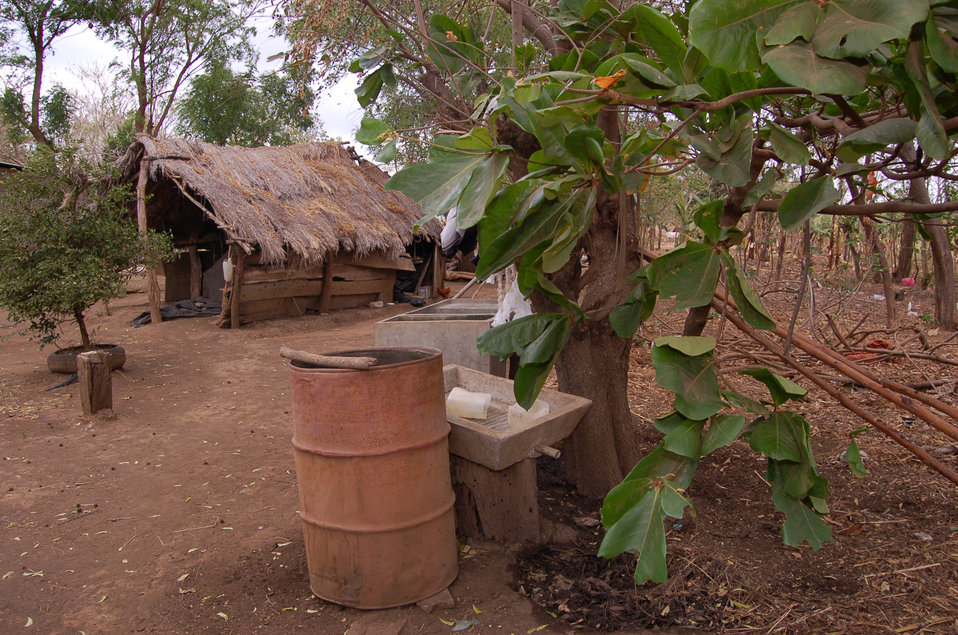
Nicaraguan lifestyle proves hard, offers valuable lessons

Luisa Palacio-Cortez, the 83-year-old woman whose house neighbors Camp Red Horse, washes clothes in this washbasin in the backyard. She said one of the her many family members who live in the cluster of houses on their property sleeps in the shed pictured here.